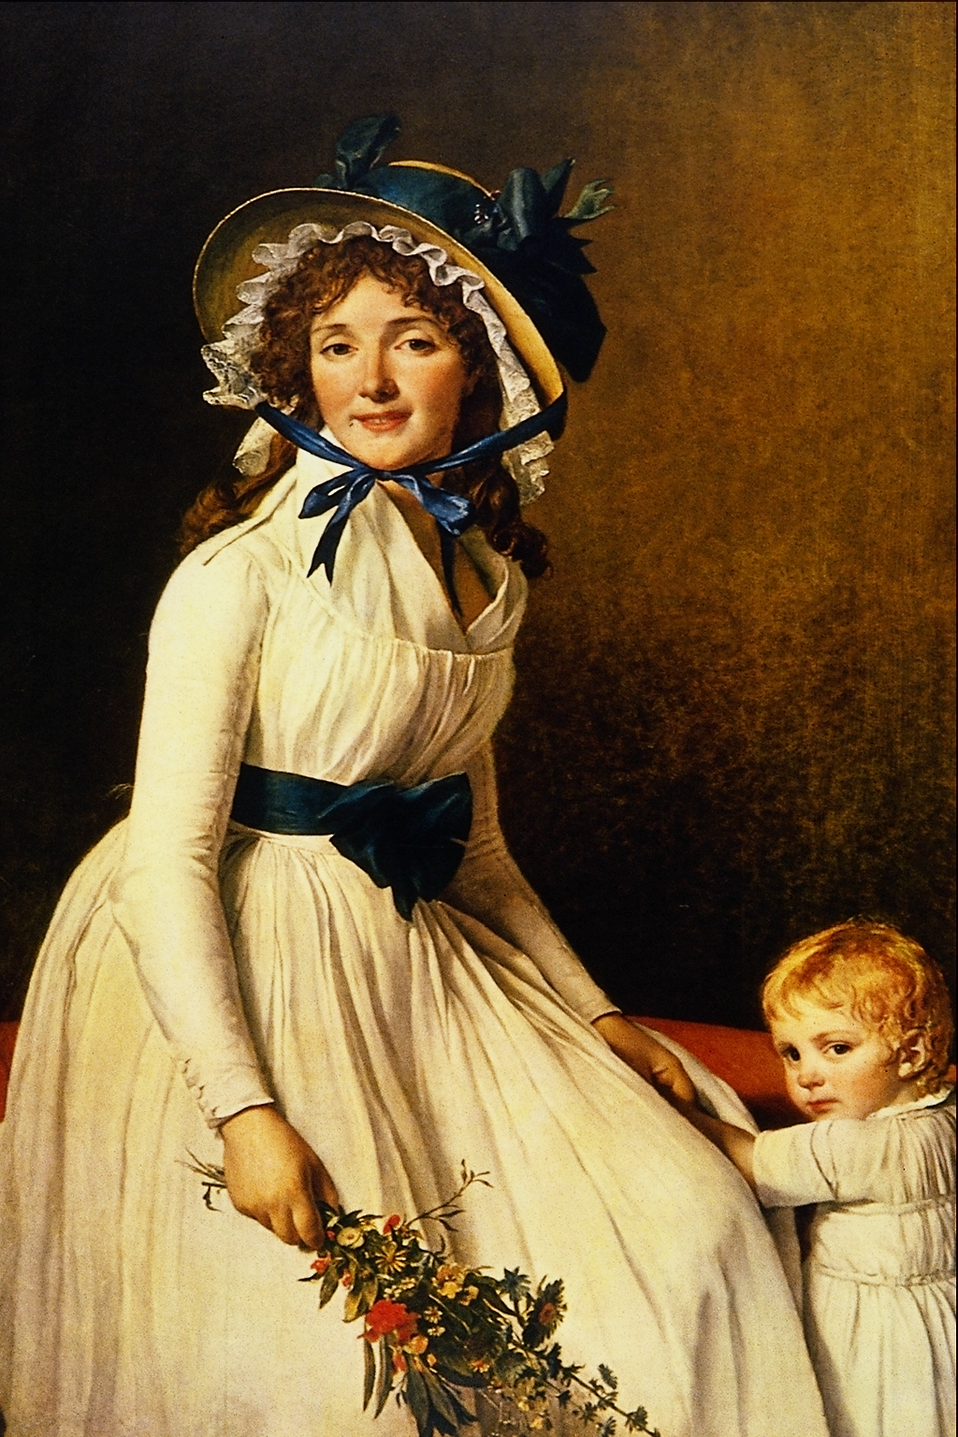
Madame Seriziat (1795) - Jacques Louis David